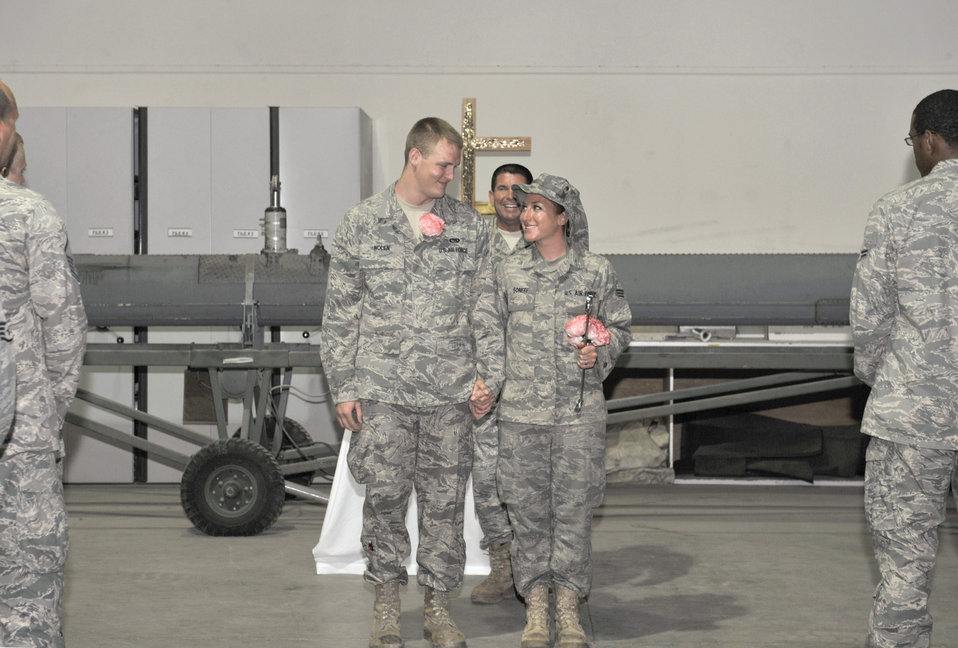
Couple's path to marriage

Senior Airman Donald Nolen and Senior Airman Sheri Nolen walk down the aisle as husband and wife after their wedding ceremony Aug 4, 2010, at an air base in Southwest Asia. The Nolens are members of the 380th Expeditionary Aircraft Maintenance Squadron. They were married by proxy on July 12, 2010, through the state of Montana.